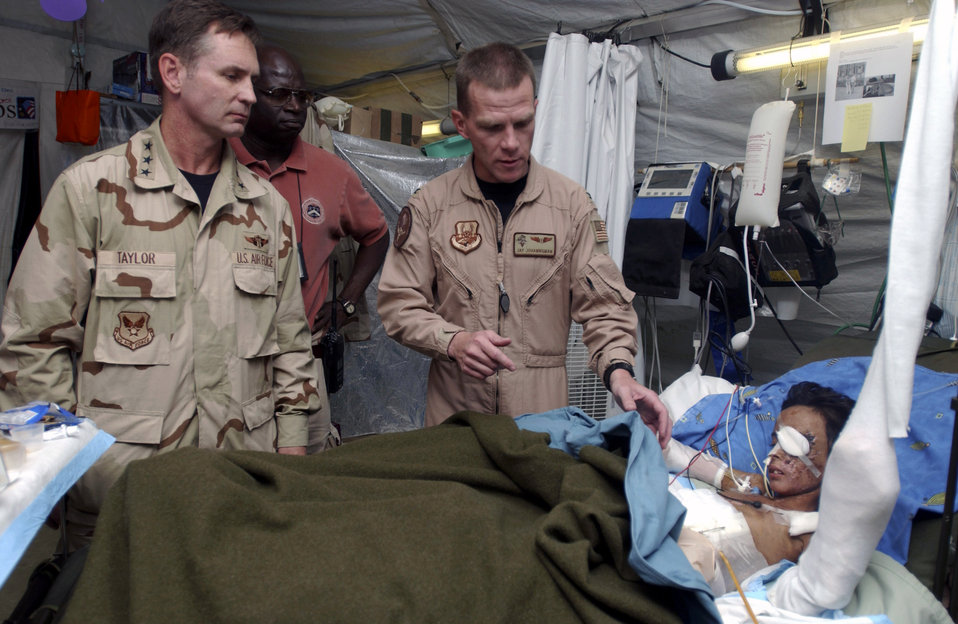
Iraqi Freedom

TALIL AIR BASE, Iraq -- Lt. Gen. George Taylor, the surgeon general of the Air Force, is briefed by Col. Jay A. Johannigman, deputy commander of the 332nd Expeditionary Medical Group, on injuries sustained by an Iraqi boy from a land mine explosion at his school near here Oct. 27.